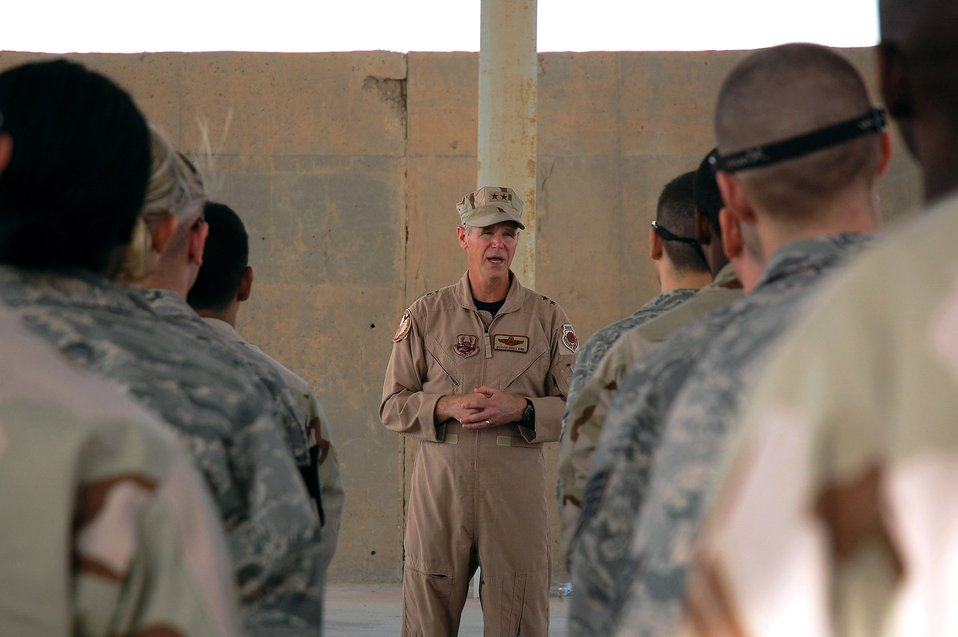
AFCENT deputy commander visits deployed Airmen

Maj. Gen. William L. Holland speaks with members from the 386th Expeditionary Maintenance Group April 2 at a Southwest Asian air base. General Holland is the 9th Air Force vice commander and the deputy commander of U.S. Air Forces Central from Shaw Air Force Base, S.C. He visited the area of responsibility to thank the Airmen for what they do and to take back any inputs on how to better train and equip the Airmen supporting operations Iraqi Freedom and Enduring Freedom.